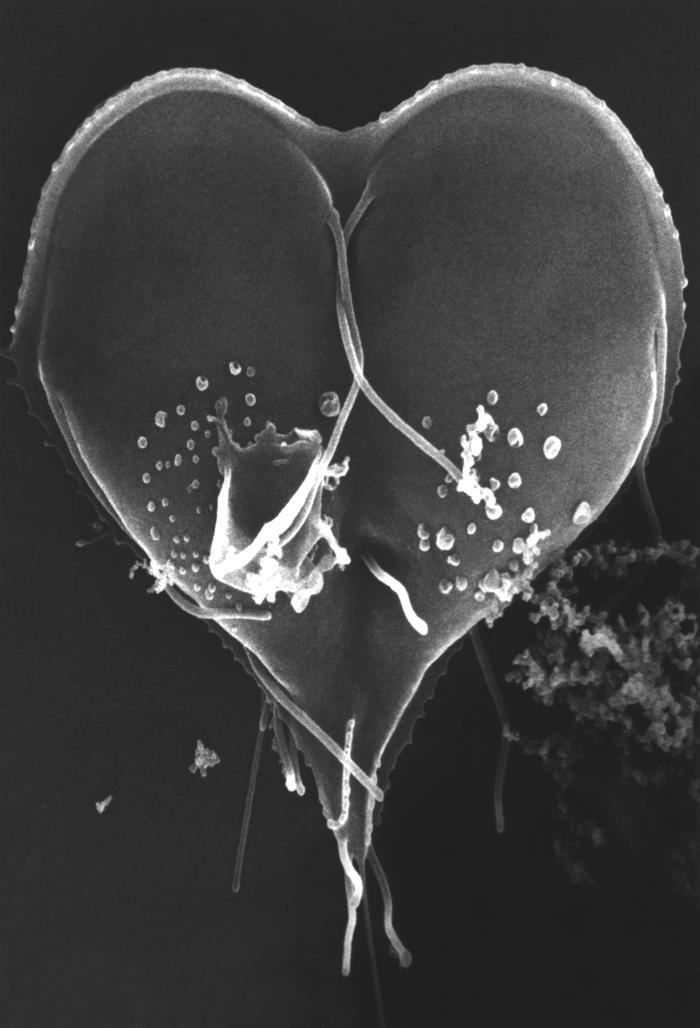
This scanning electron micrograph (SEM) depicted a Giardia lamblia protozoan that was about to become two separate organisms, as it was caught in a late stage of cell division, producing a heart-shaped form. Note the intimate intertwining of two of the organisms' eight flagella that will facilitate their motility.